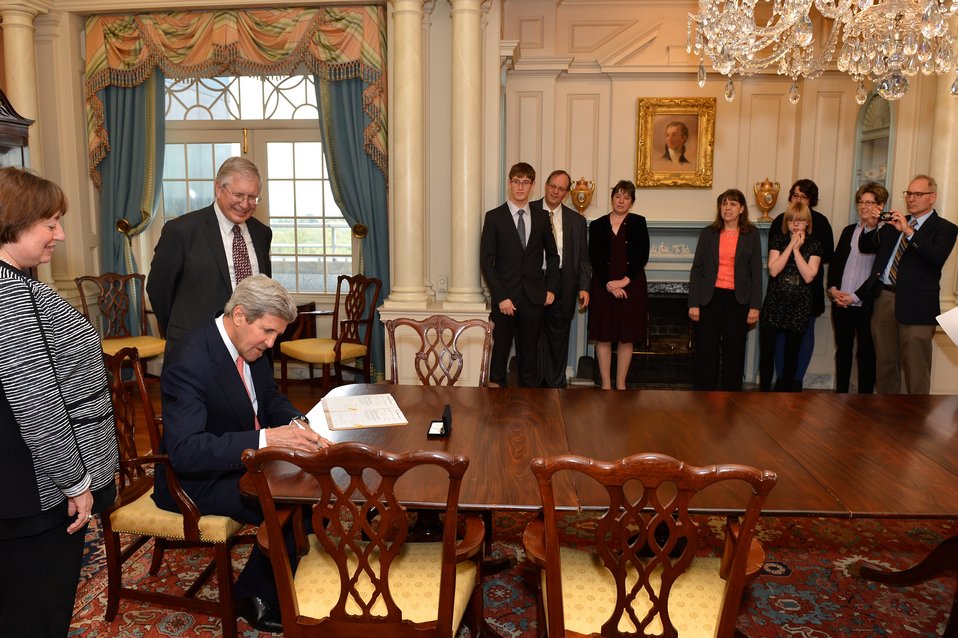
Secretary Kerry Signs the Appointment Papers for Under Secretary Novelli

U.S. Secretary of State John Kerry signs the appointment papers for Catherine Novelli to become Under Secretary for Economic Growth, Energy, and the Environment at the U.S. Department of State in Washington, D.C., on April 22, 2014.